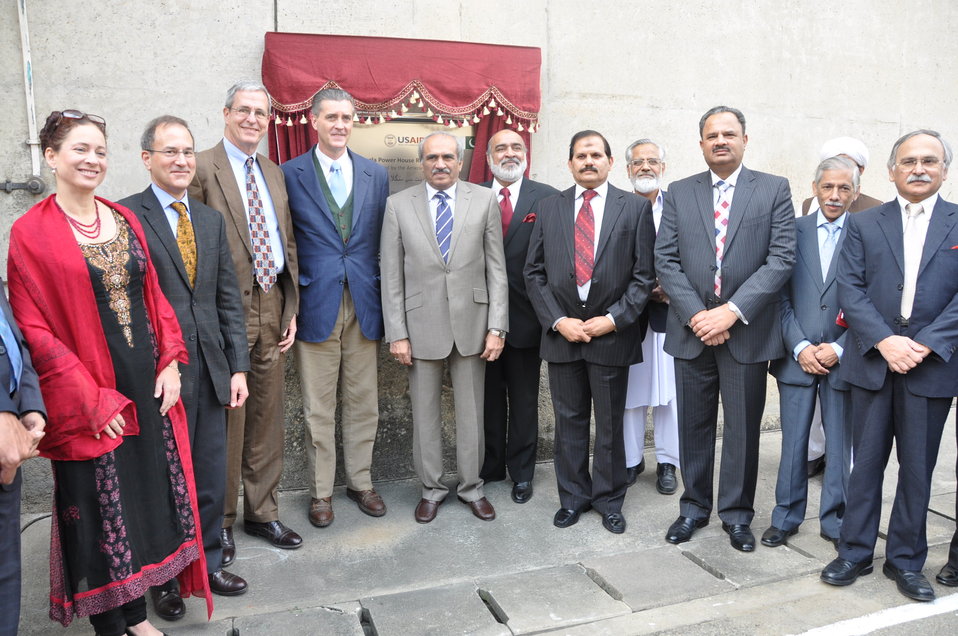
With the team